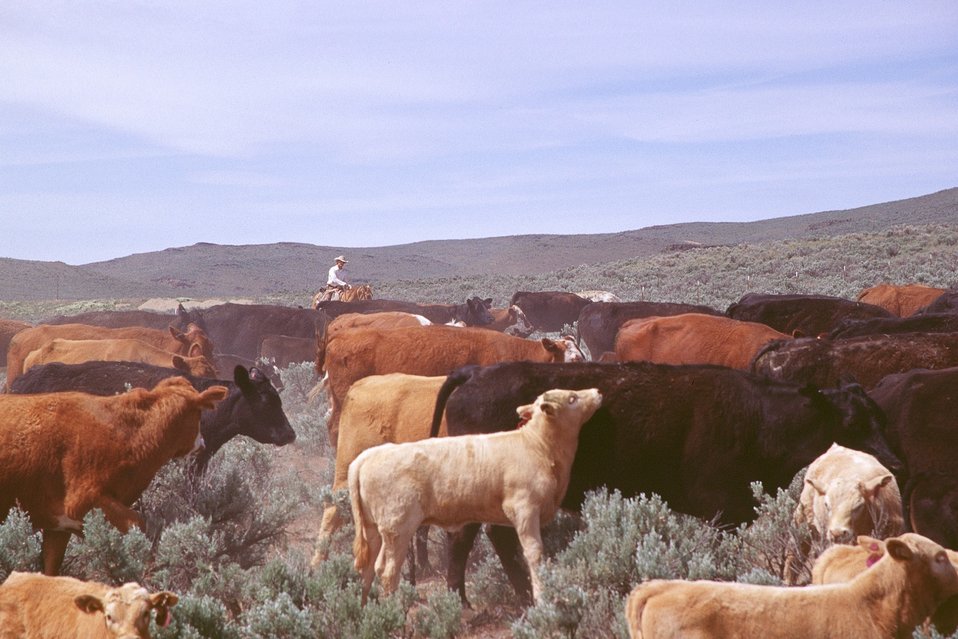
Immigrant Flats, Baker City RA. Herding cows.